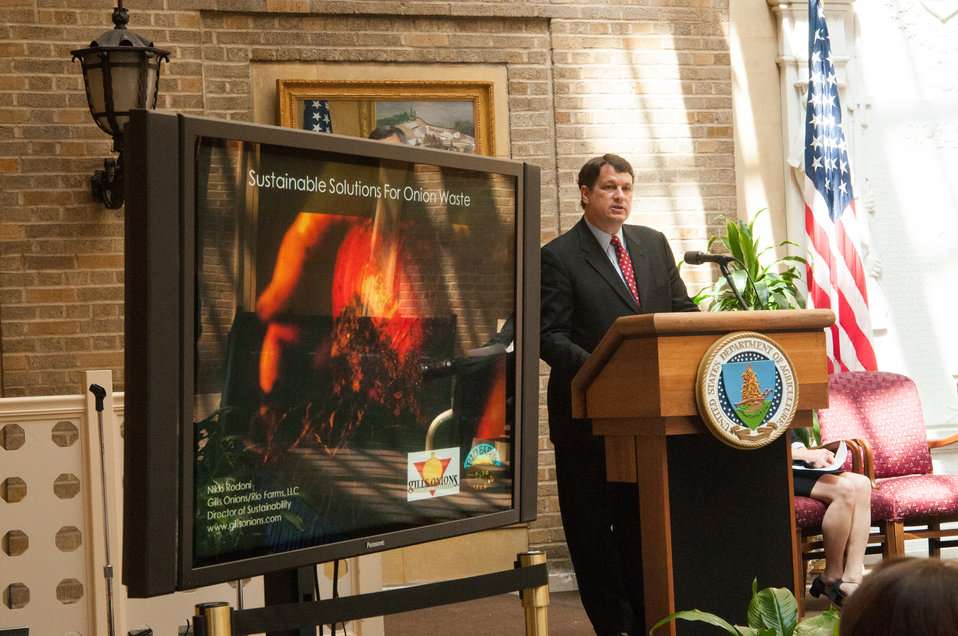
Vice President of environmental affairs and sustainability for United Fresh representing Rio Farms and Gills Onions Burleson Smith discusses the importance of public and private cooperation in the effort to end hunger in the U.S. during the U.S. Food Waste Challenge sponsored by the U.S. Department of Agriculture (USDA) and Environmental Protection Agency at USDA in Washington, D.C. on Tuesday, Jun. 4, 2013. The U.S. Food Waste Challenge is a nationwide effort to reduce, recover and recycle U.S. food waste.